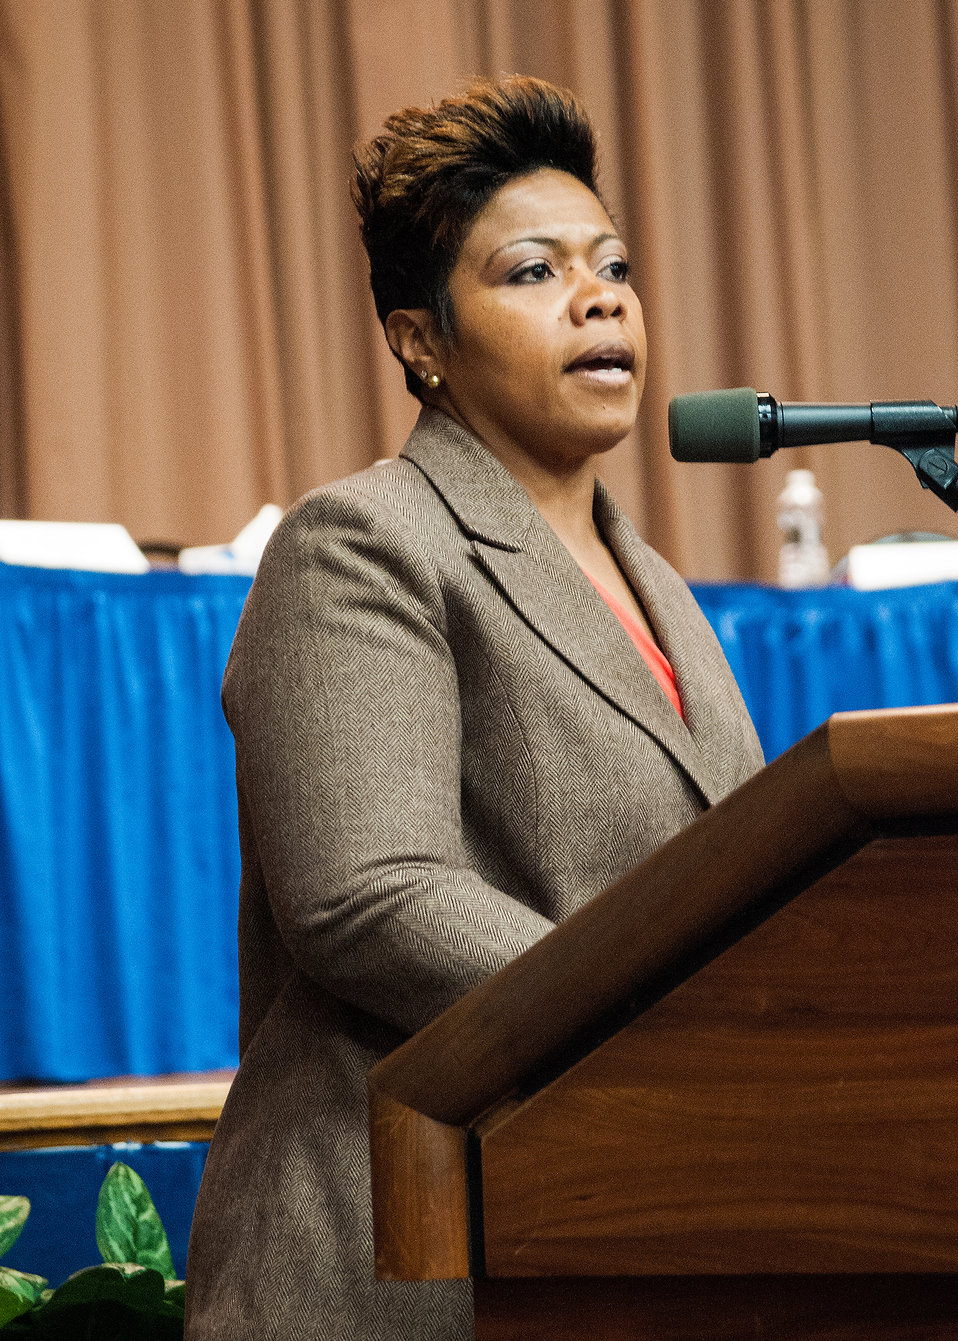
U.S. Department of Agriculture (USDA) Office of the Chief Information Officer (OCIO) employee Antoinetta Grant sang the Star Spangled Banner at the USDA OCIO National Women’s History Month celebration at the USDA Jefferson Auditorium in Washington, D.C. on Thursday, Mar. 14, 2013. The theme of this year’s celebration is, “Recognizing American Women’s Outstanding Contributions to the Field of Science, Technology, Engineering and Mathematics,” commonly referred to as STEM.